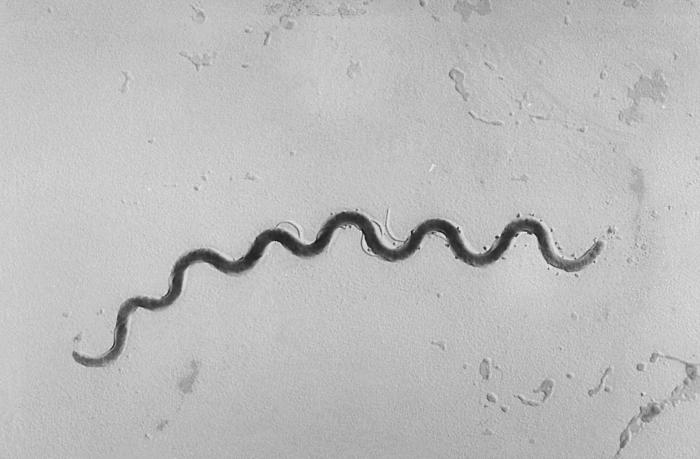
This photomicrograph depicts a Treponema pallidum bacterium, a spirochete 5 - 15 micrometers in length, which is the causative agent of syphilis.